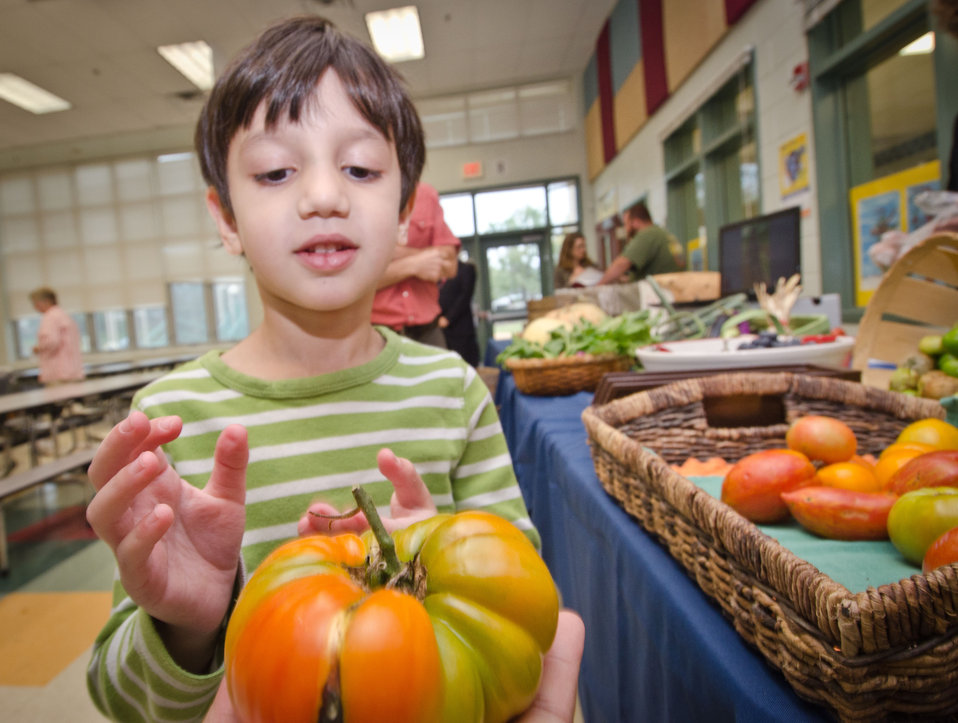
Students saw, touched and sometimes tasted produce that was new to them at Nottingham Elementary School in Arlington, VA, on Wednesday, October 12, 2011. Farmers from Bigg Riggs Farm in Hampshire County, WV, and Maple Avenue Market Farm in Vienna, VA were very popular with the students. Today's menu included roasted chicken, roasted butternut squash with dried cranberries, farm fresh mixed lettuce salad, turkey wraps, pita wedges, hot muffins, carrots, Asian pears and more.